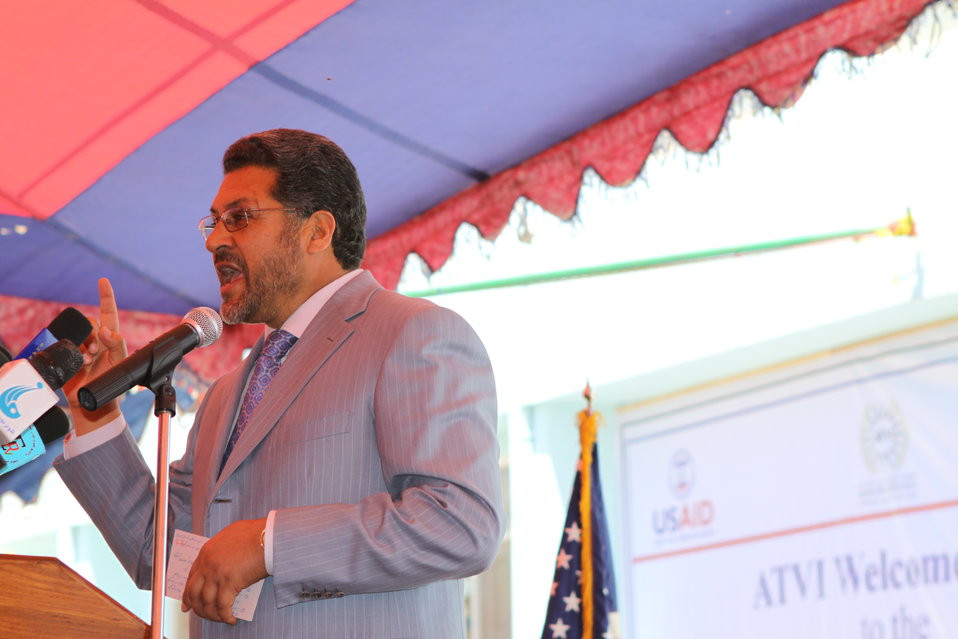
100522 ATVI Graduation 084